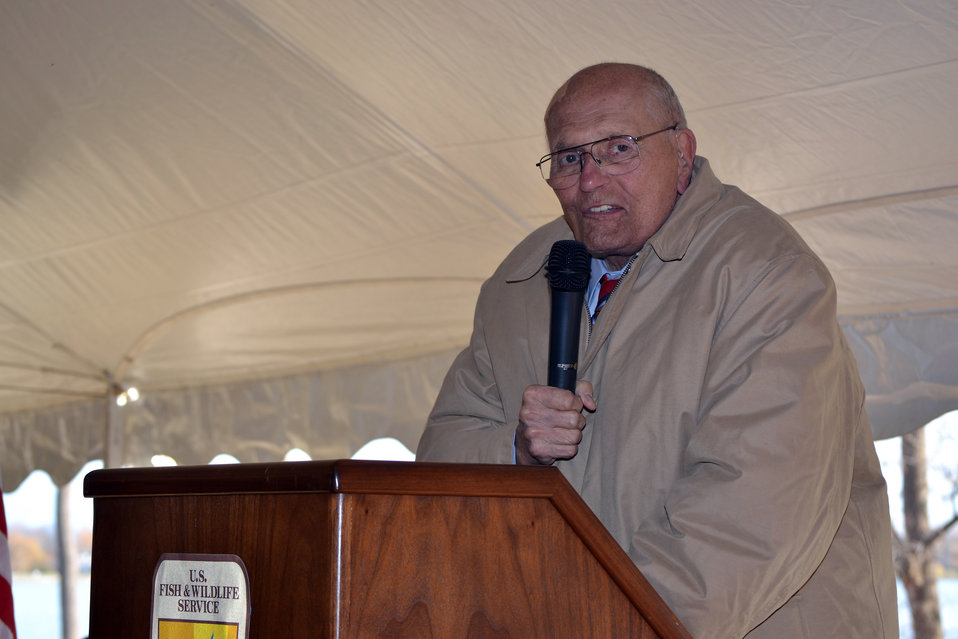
Congressman John Dingell proudly talked about his youth and the importance of places like Detroit River International Wildlife Refuge.